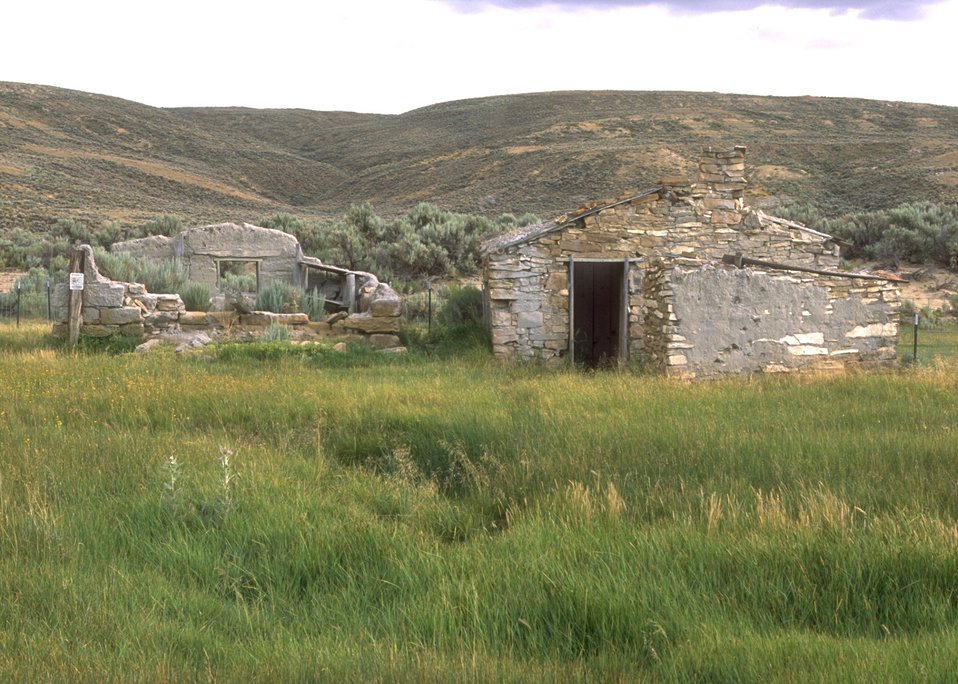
Historic Crookston Ranch near OHV Sand Dunes Area, Rock Springs Field Office.